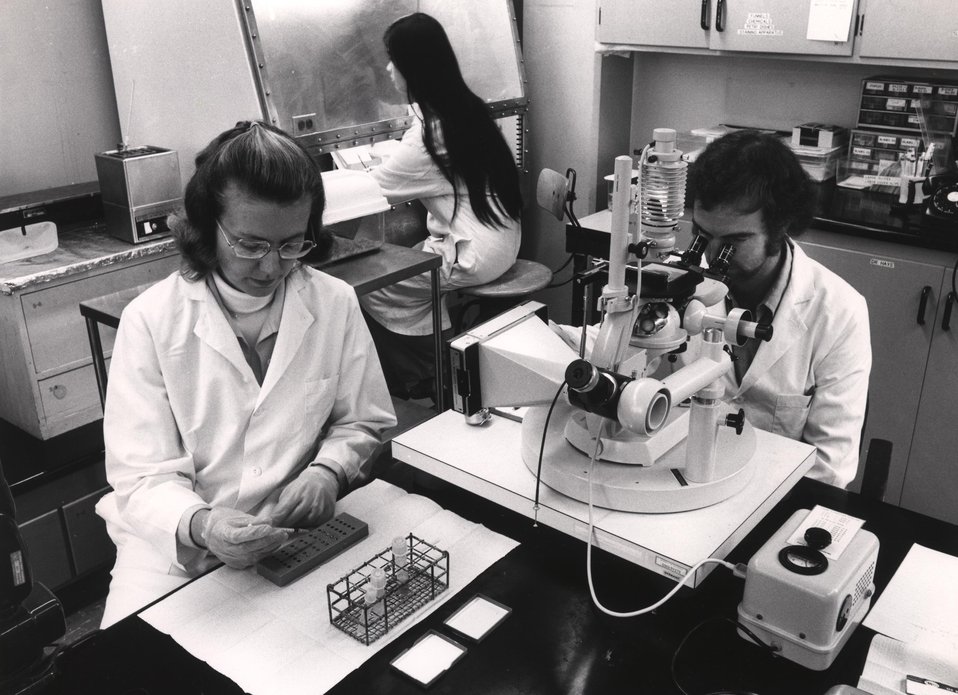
Small numbers of mouse leukemia cells can be isolated and transplanted for study by a technique developed at the Laboratory for Nuclear Medicine and Radiobiology on the UCLA campus.